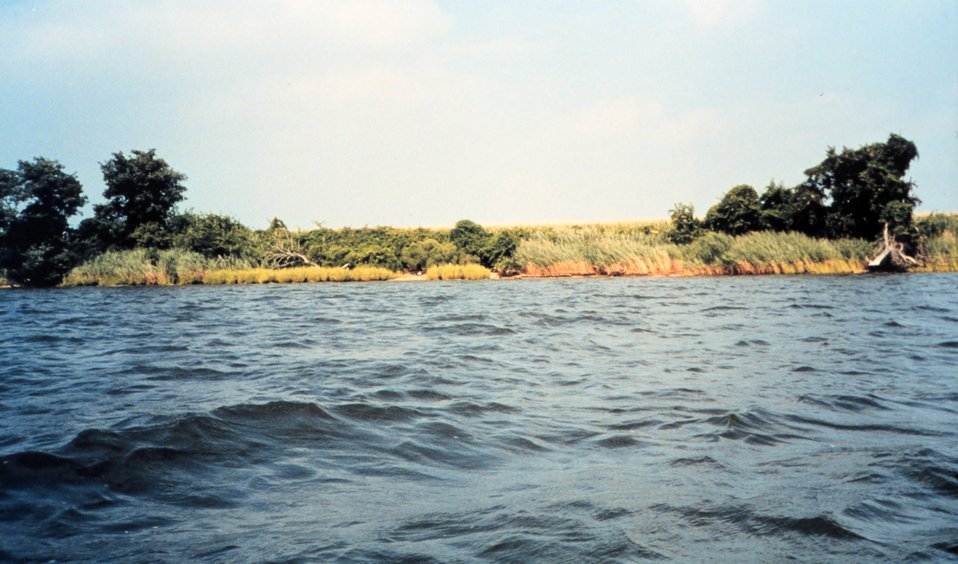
View of the Wye Island Natural Resources Area from the Wye River. Preserved from development, most of the island is still in agricultural use.